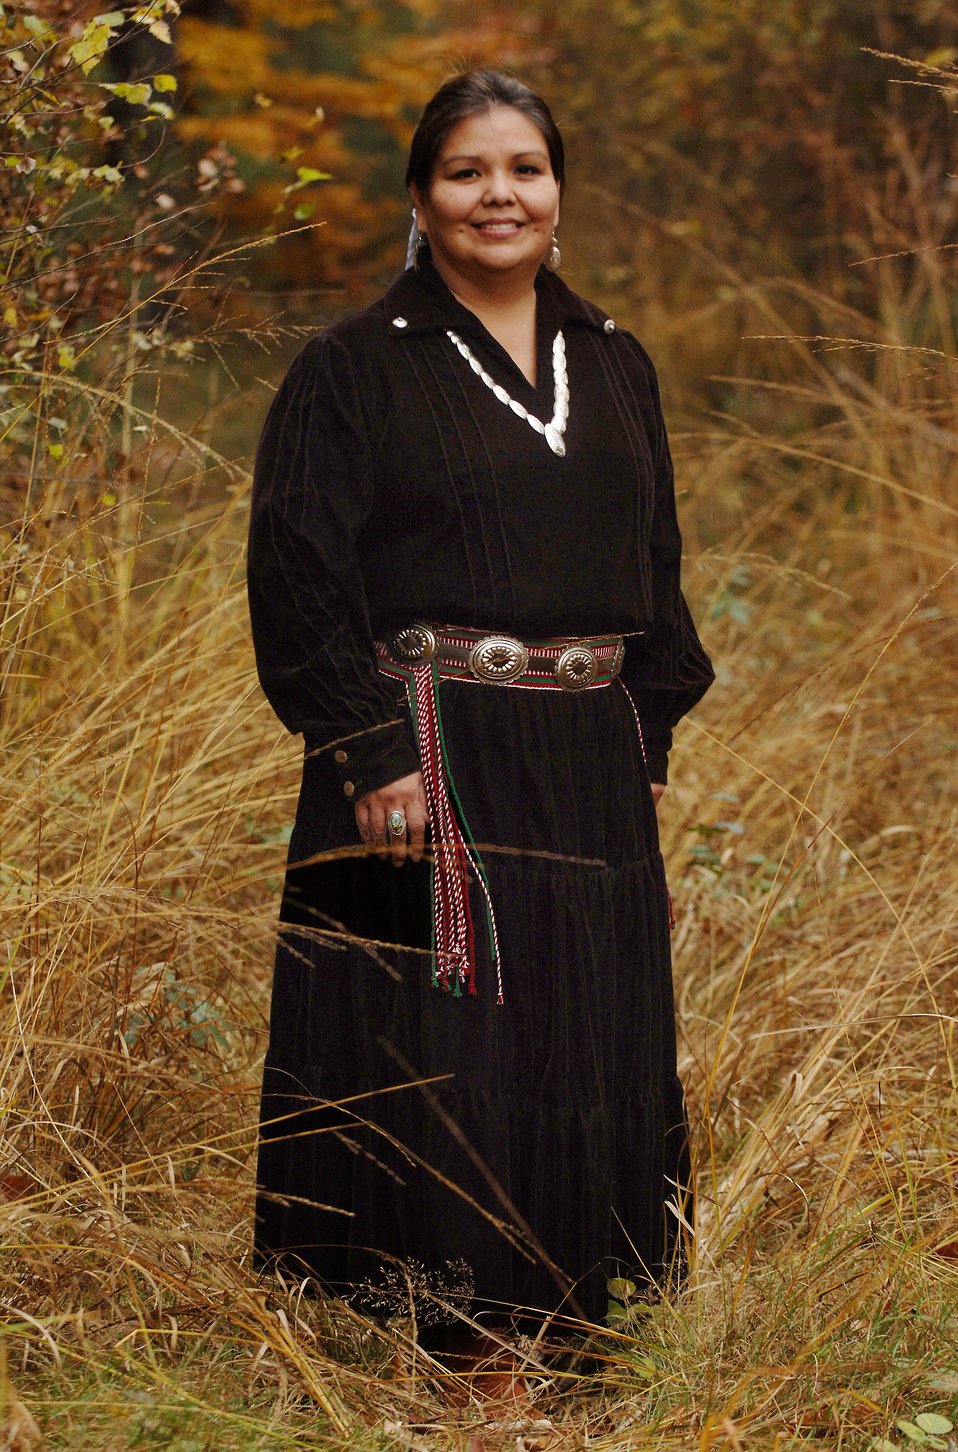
Balancing traditional, mainstream cultures as part of the Navajo Nation

Glenda Shirley-Yellowhorse is a human resource advisor assigned to the 435th Mission Support Squadron at Ramstein Air Base, Germany. She is also an enrolled member of the Navajo Nation from the